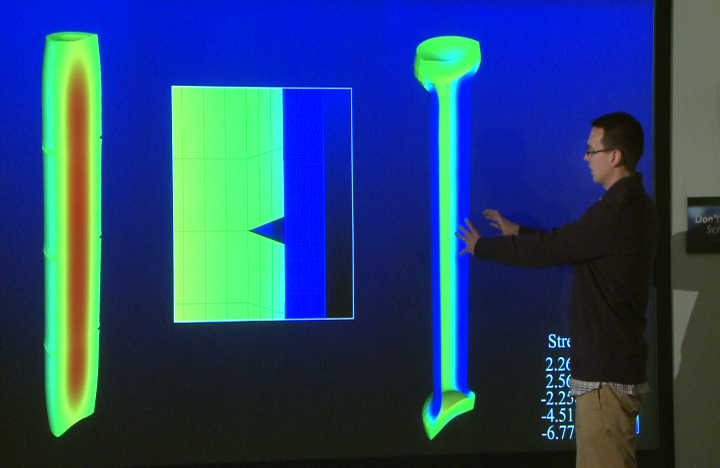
AT INL, THE MULTIPHYSICS OBJECT-ORIENTED SIMULATION ENVIRONMENT (MOOSE) SIMULATION PLATFORM LETS RESEARCHERS PLUG AND PLAY BY ENTERING THE MATHEMATICAL MODEL DESCRIBING SYSTEMS LETTING MOOSE EXCUTE THE SIMULATION.